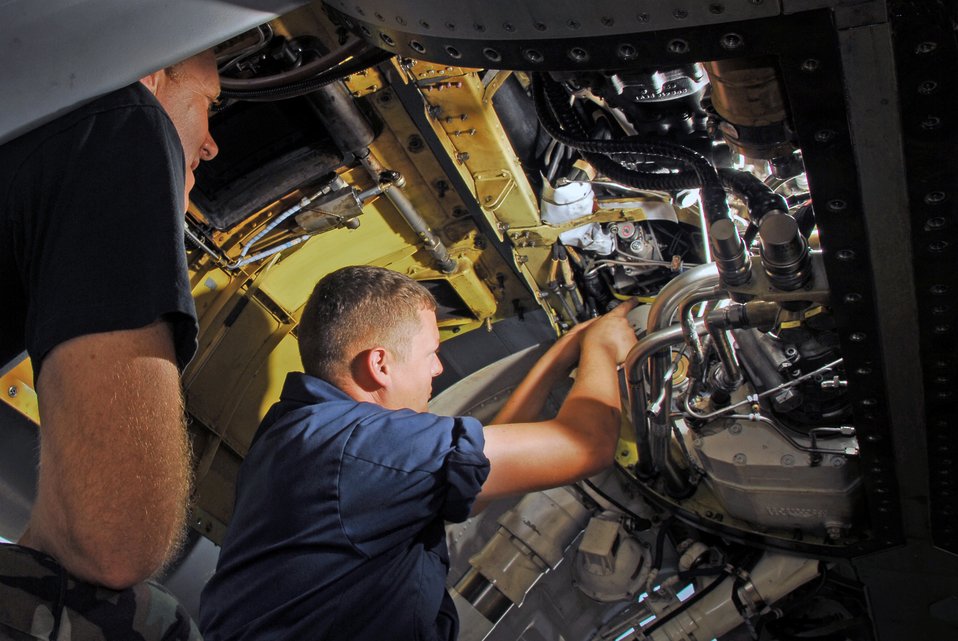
Right part, right place

Senior Airman Joshua Aubihl (right) installs a fuel control unit in an F-16 Fighting Falcon at Truax Field, Wis., while Master Sgt. Kevin Fuerbringer watches. Both Airmen are with the Wisconsin Air National Guard's 115th Fighter Wing.